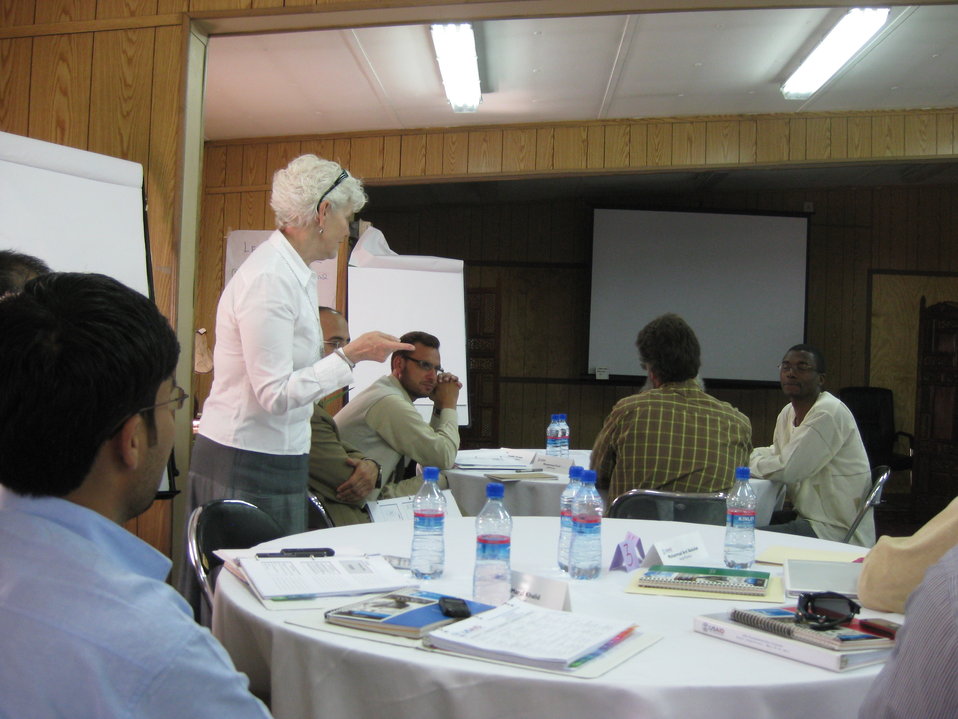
Afghan Youth Voices 036